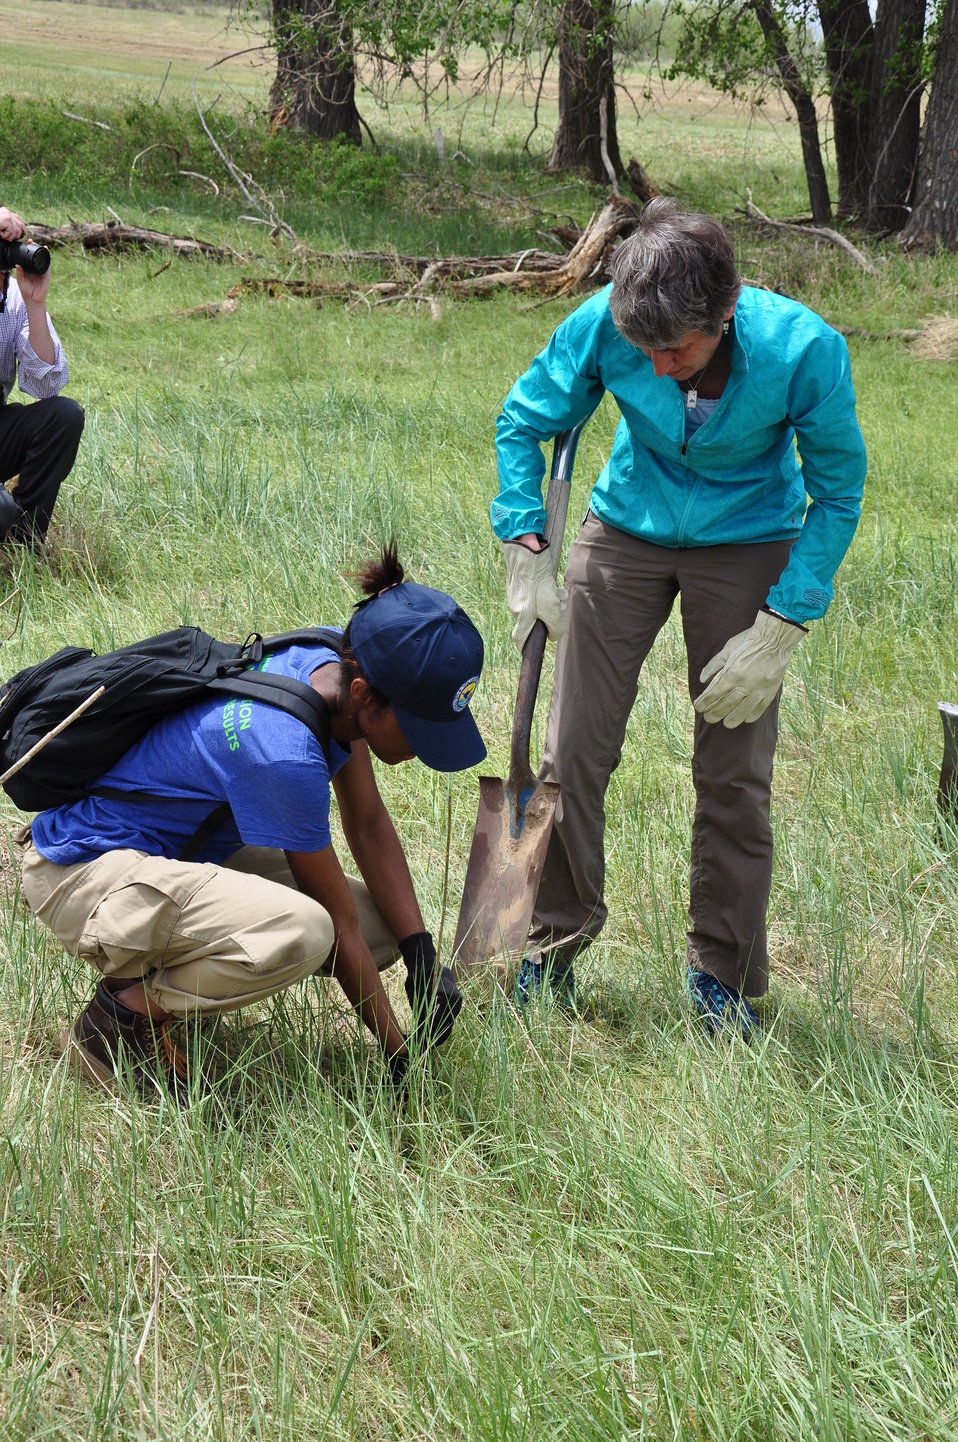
Secretary Jewell and a Member of Groundwork Denver Planting a Cottonwood Tree